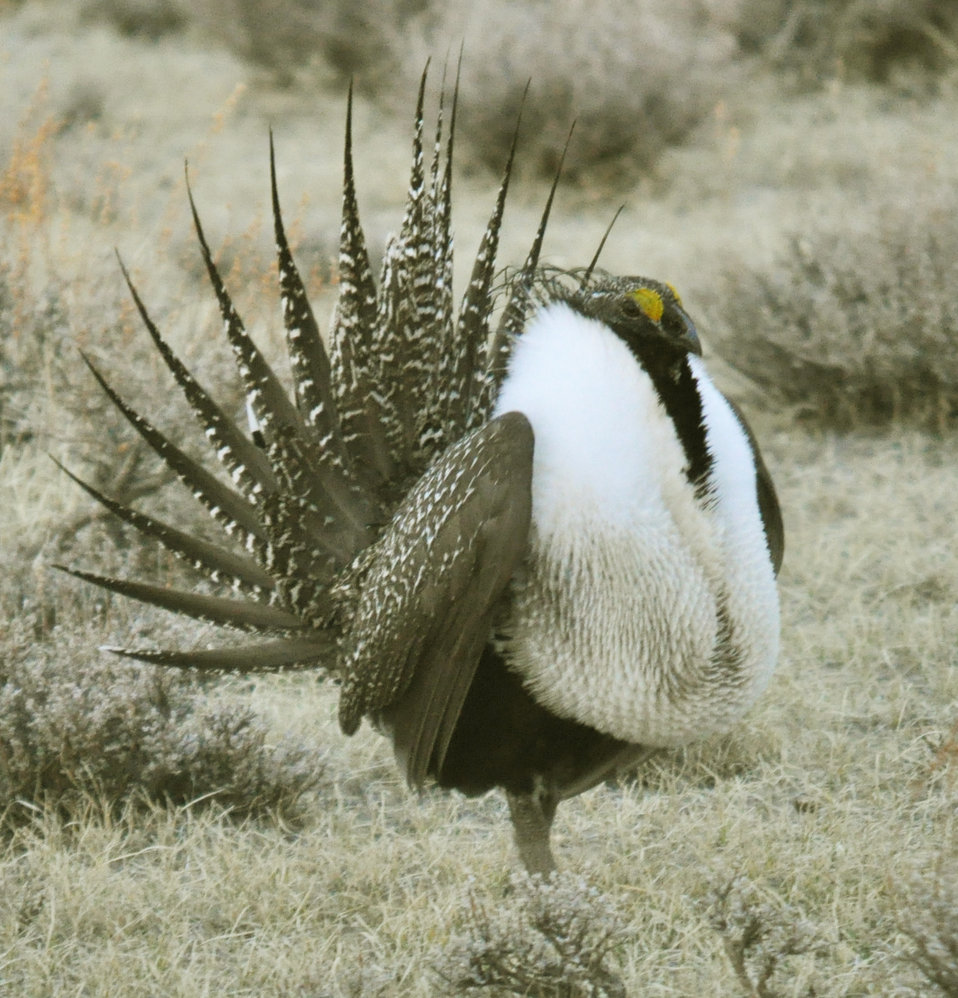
Male greater sage-grouse struts to attract females at a lek (breeding or dancing ground) near Bodie, California in April.